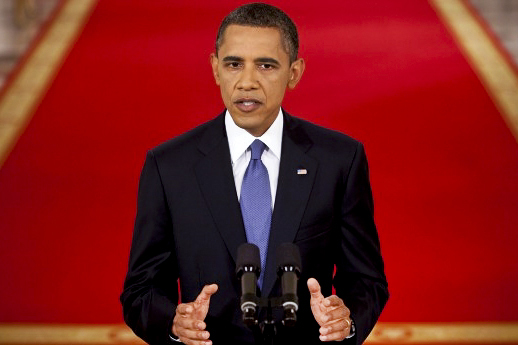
Obama announces troop reductions, way forward in Afghanistan

President Barack Obama addresses the nation about the way forward in Afghanistan and his plan to remove 10,000 American troops from the country by the end of this year June 22, 2011, at the White House.